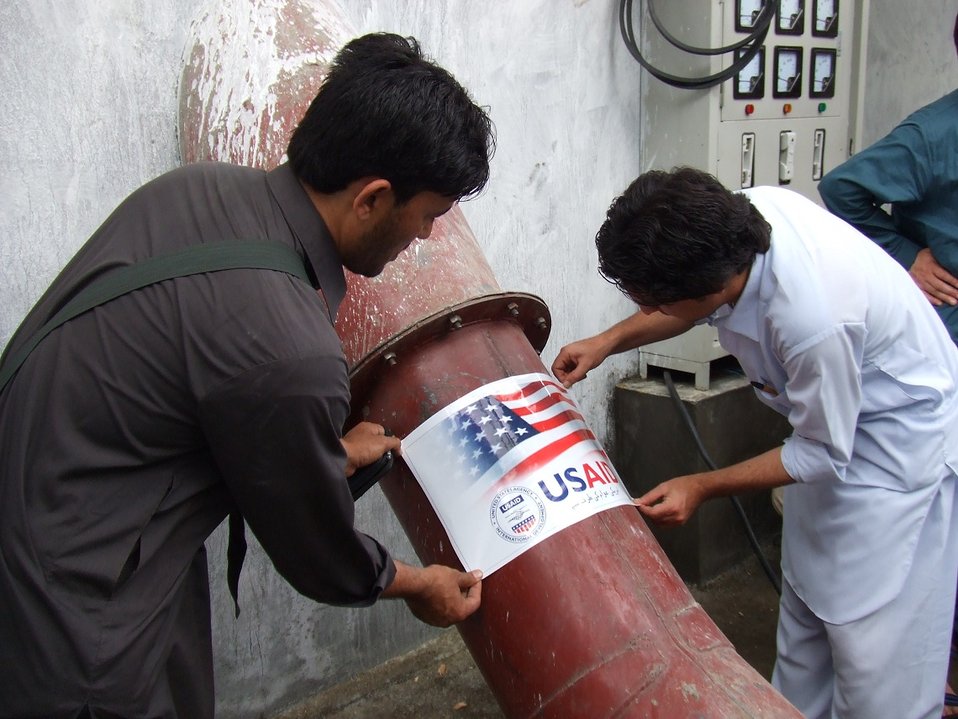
Workers on the Project

A new wave of energy has swept a remote village of Matta Tehsil. Children are excited, elders relieved. Electricity had lit their dark houses after over six decades of independence and connected them to the modern world.
“We can now watch cartoons on the TV just like all the other children,” said an excited child during the inauguration of a micro-hydropower station on Saturday.
The community-based power station, which will supply electricity to about 110 households in Swatai village, has been installed with the assistance of Small Grants Ambassador Fund Program of the USAID in collaboration with the Swat Participatory Council (SPC).